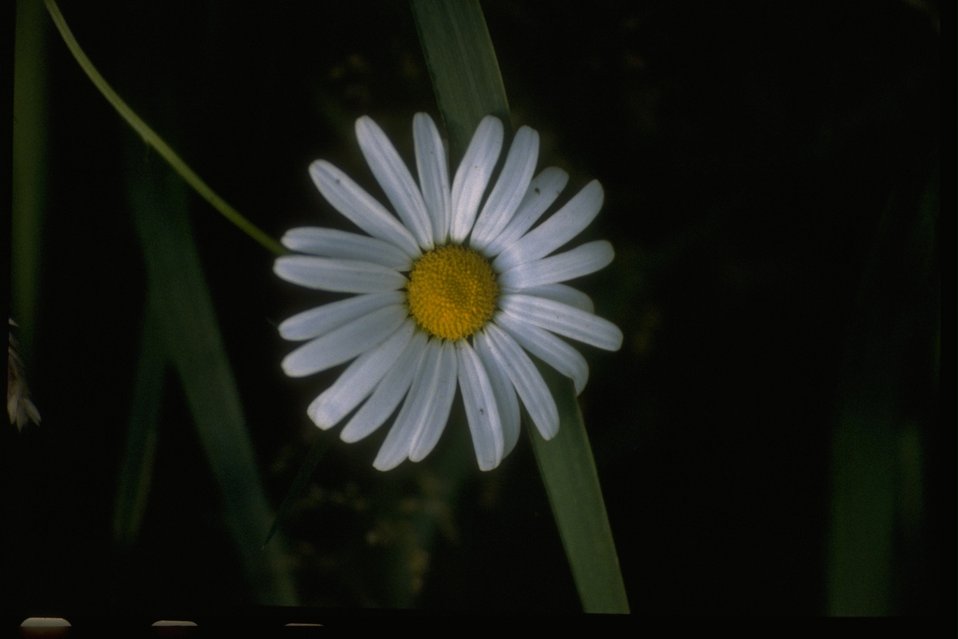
A daisy at Headland grounds of the Yaquina Head ONA.